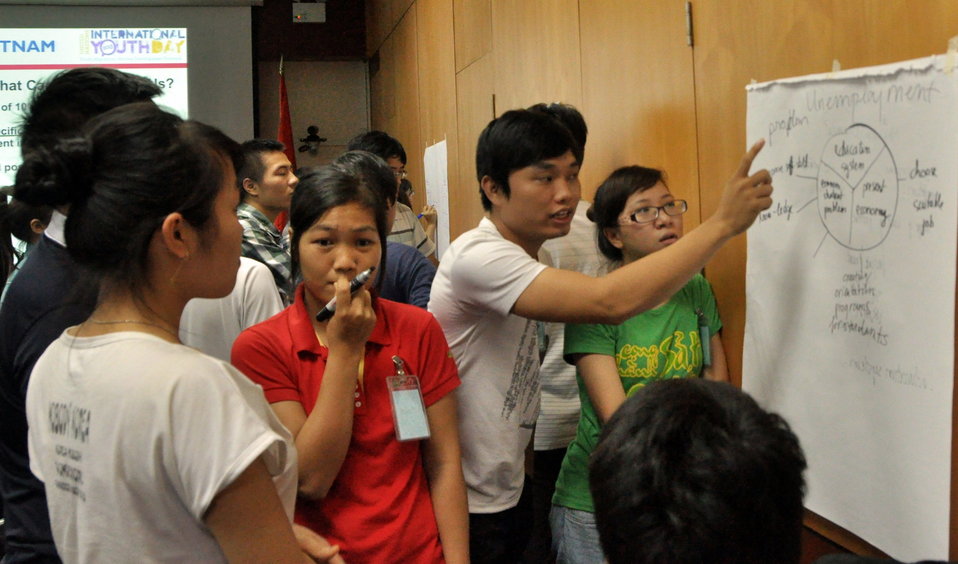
International Youth Day 2013: USAID hosts a lively discussion and group exercise on how youth can join in to advance development84

Hanoi, August 12, 2013.